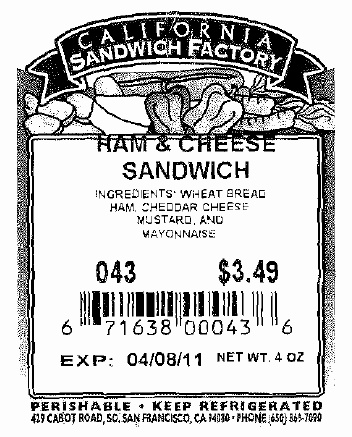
RECALLED - Sandwiches

April 12, 2011 - Product Recall - A-1 Sandwich Company Voluntarily Recalls Sandwiches with Undeclared Allergens.